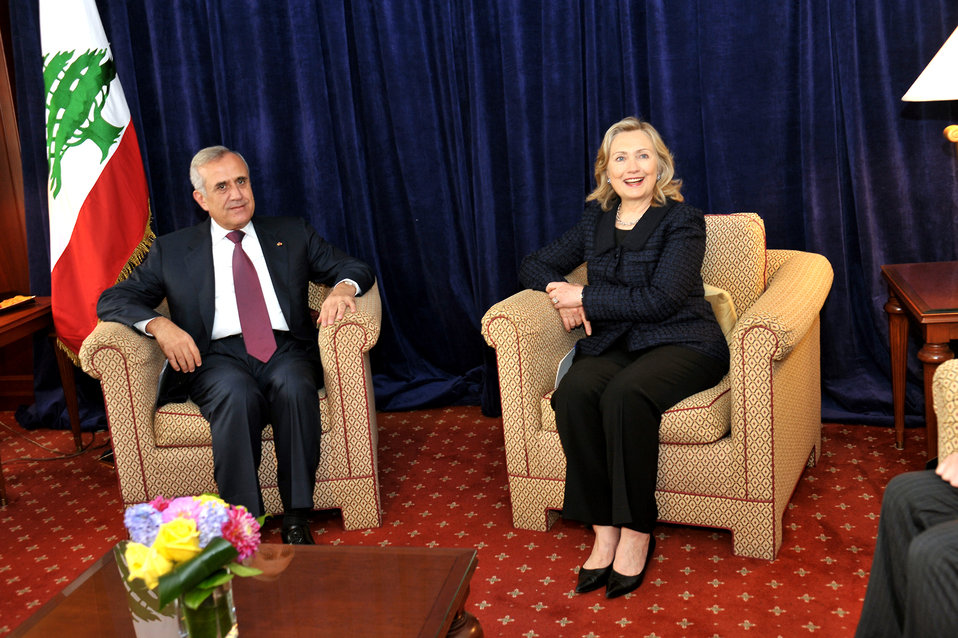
Secretary Clinton Holds a Bilateral With Lebanese President Sleiman

U.S. Secretary of State Hillary Rodham Clinton holds a bilateral meeting with Lebanese President Michel Sleiman at the Palace Hotel in New York, New York, on September 24, 2010.